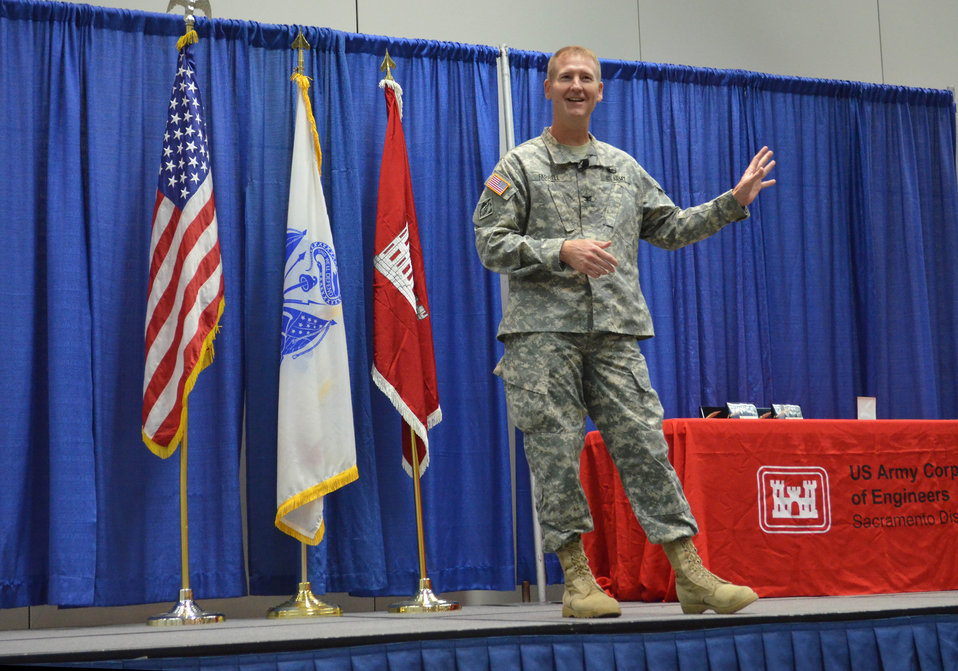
Col. Farrell speaks to the district

130716-A-QE256-006 – Colonel Michael J. Farrell, U.S. Army Corps of Engineers Sacramento District commander, addresses the district in his first town hall meeting July 16, 2013 in Sacramento, Calif. Farrell spoke about his experience with the Corps of Engineers and explained the direction he wants to see the district go during his time in command. Photo cropped for emphasis.